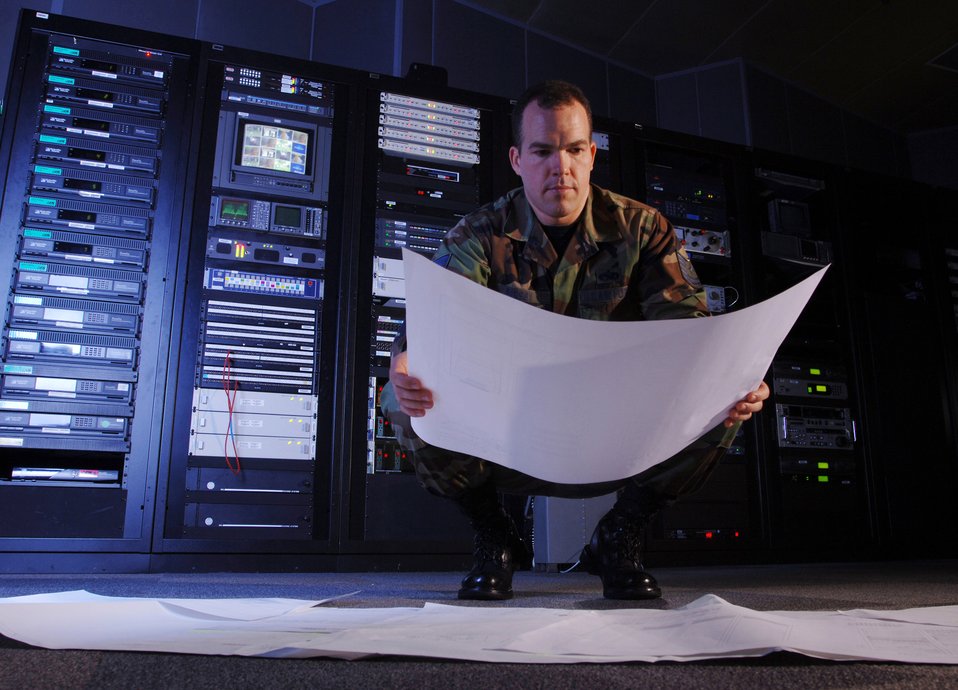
YOKOTA AIR BASE, Japan (AFPN) -- Tech. Sgt. Tracy Bigsby uses schematics during a standardization check on the satellite distribution system here at Air Force News Agency, Operating Location-C. Sergeant Bigsby is a broadcast maintenance engineer. The OL-C mission is to provide maintenance support for American Forces Network-Tokyo and other Air Force broadcast detachments in Japan.